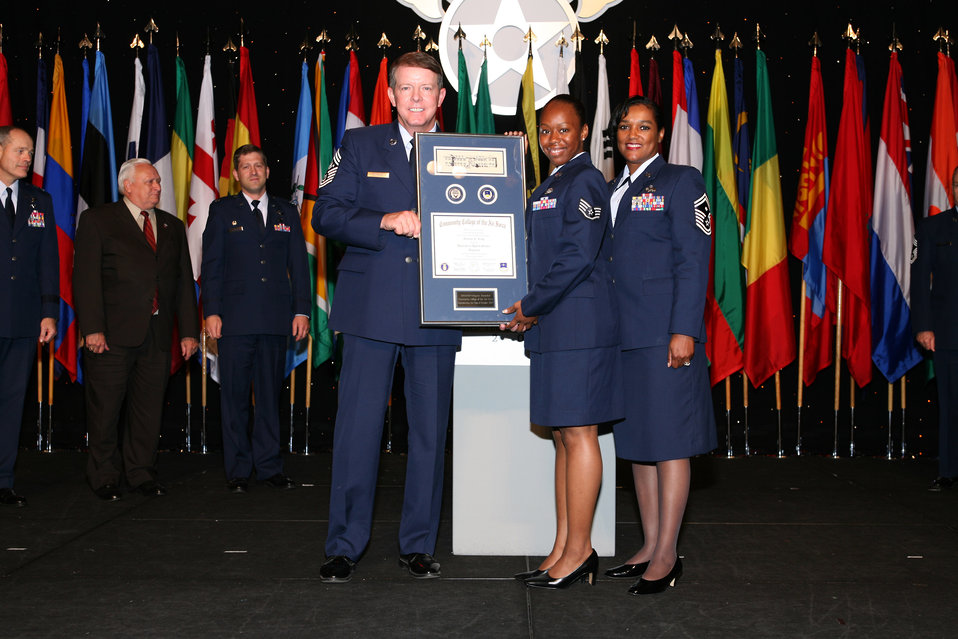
CCAF reaches 300,000 degree milestone

Chief Master Sgt. of the Air Force Rodney J. McKinley presents the 300,000th Community College of the Air Force degree to Staff Sgt. Danyail King during a ceremony at the Air Force Association's 2007 Air & Space Conference and Technology Exposition in Washington, D.C. Standing with Sergeant King is her first sergeant, Senior Master Sgt. Cindy Riley.